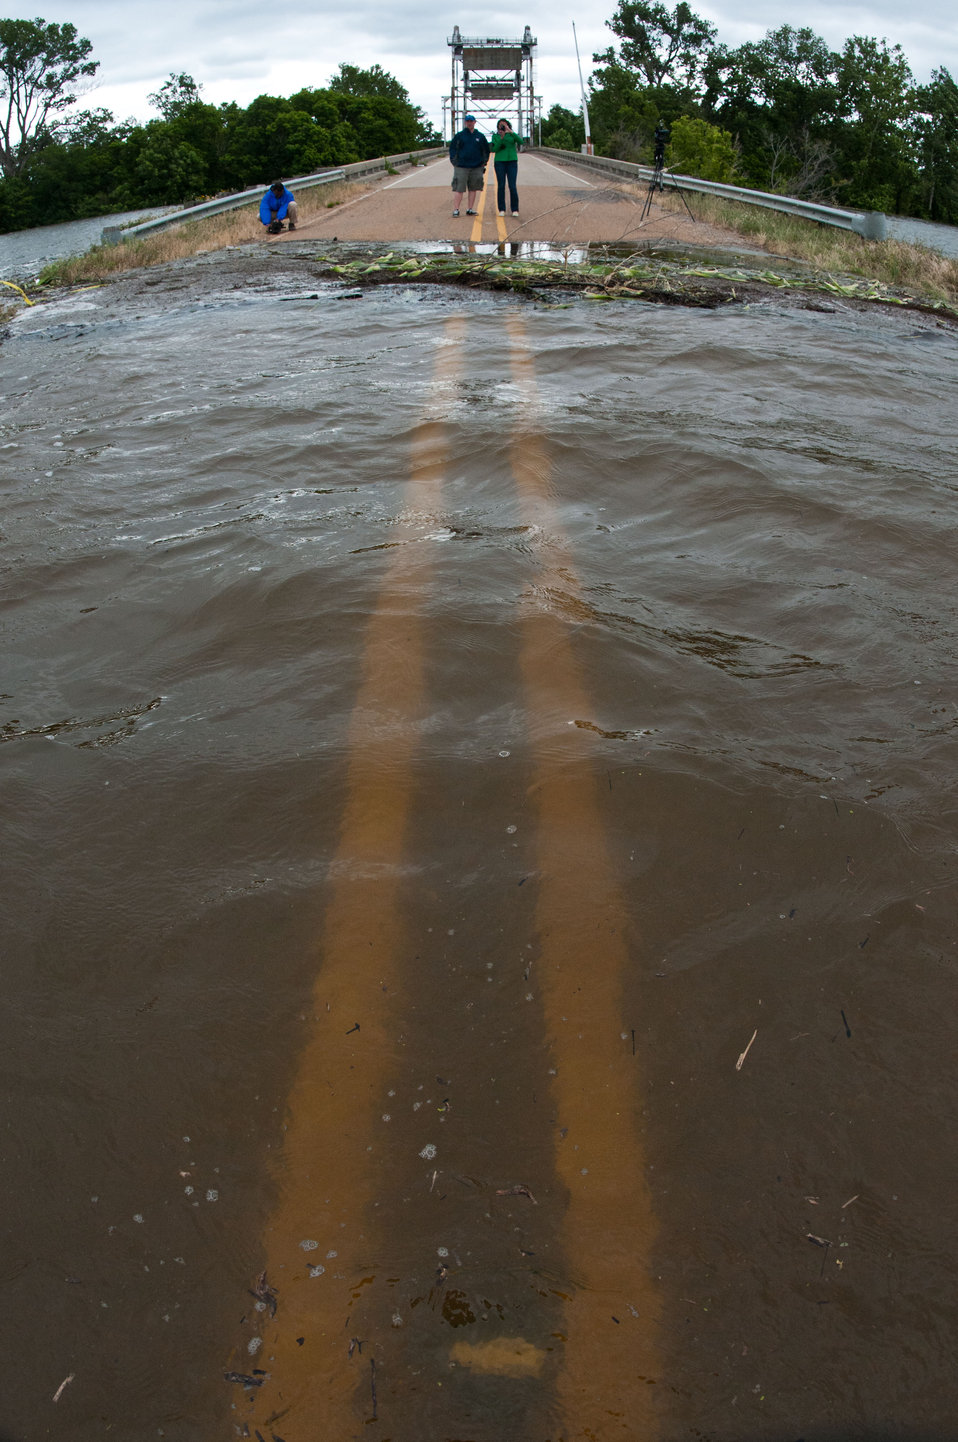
Mississippi River floodwaters have pushed into Yazoo River and into corn (right) and wheat (left) fields to either side of the roadway in Satartia, MS, on Monday, May 16. 2011. The community of 96 was evacuated and approximately 4,000 acres were completely flooded. Wave action and decay has freed parts of corn stalks collecting along the new shoreline. The water saturated soil does not allow enough oxygen to the plant, by the time the water is expected to recede, the stalks will be dead. The wheat was harvested earlier two weeks earlier than scheduled from wet fields and will have to be dried before being used or sold. News media crews come and go throughout the day reporting from this bridge and roadway.